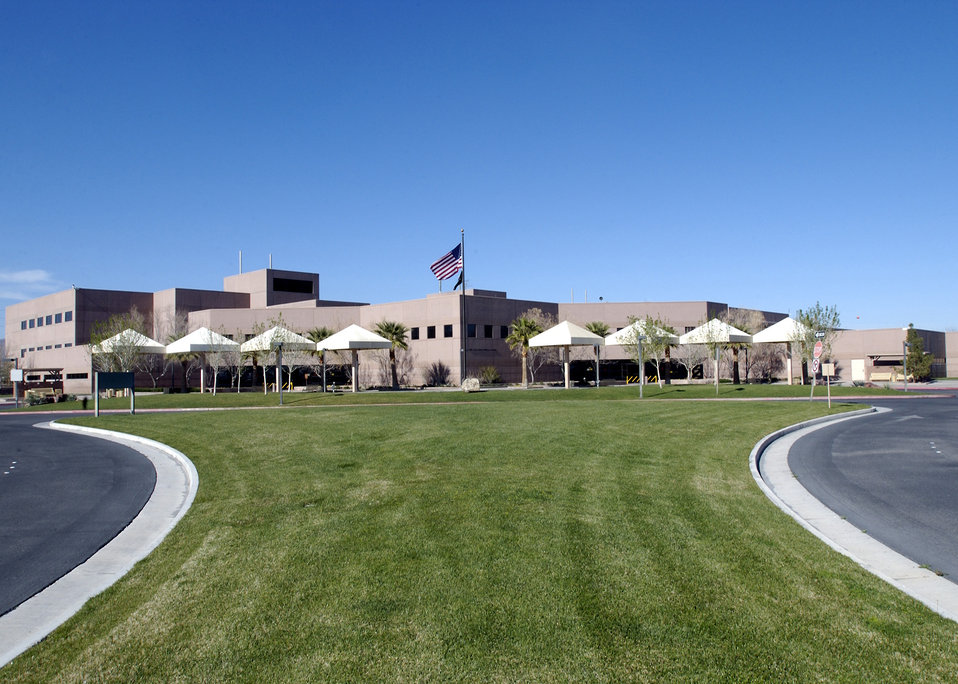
Flow improvement initiative

Officials began a flow improvement initiative Feb. 7, 2011, at the Mike O'Callaghan Federal Hospital on Nellis Air Force Base, Nev., to improve efficiency and the ability to complete the mission.